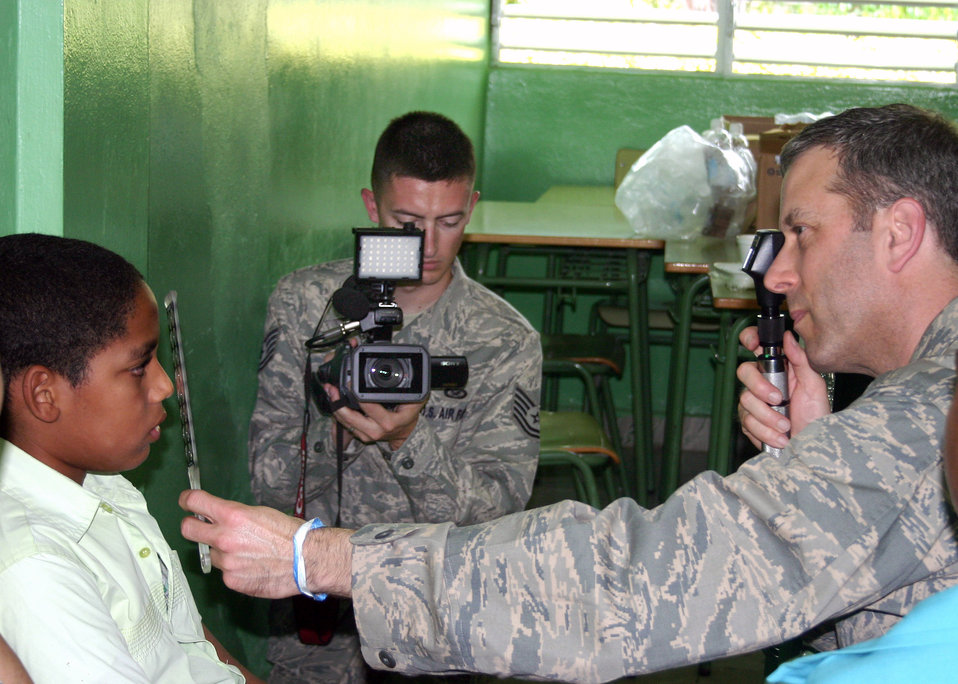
Recruiting Service team covers humanitarian mission

Tech. Sgt. Ken Raimondi videotapes Lt. Col. Christopher Rugaber performing an exam on a young boy May 1 in Padre de Las Casas, Dominican Republic. Colonel Rugaber is an optometrist assigned to the 910th Medical Squadron at Youngstown Air Reserve Station, Ohio. Sergeant Raimondi is the NCO in charge of Air Force Recruiting Service broadcast operations from Randolph Air Force Base, Texas.